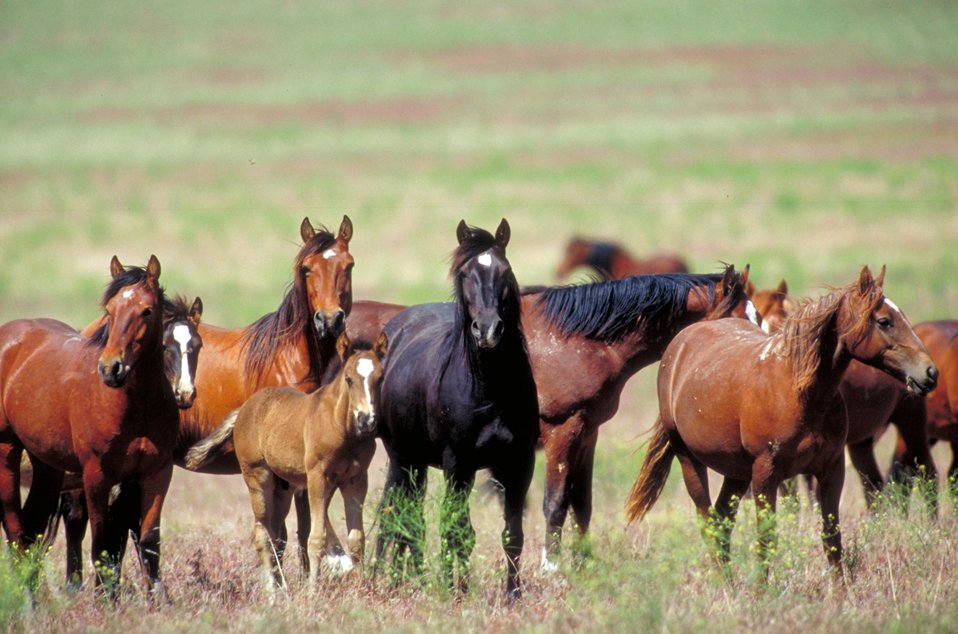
Onaqui Herd near Dugway, Utah.